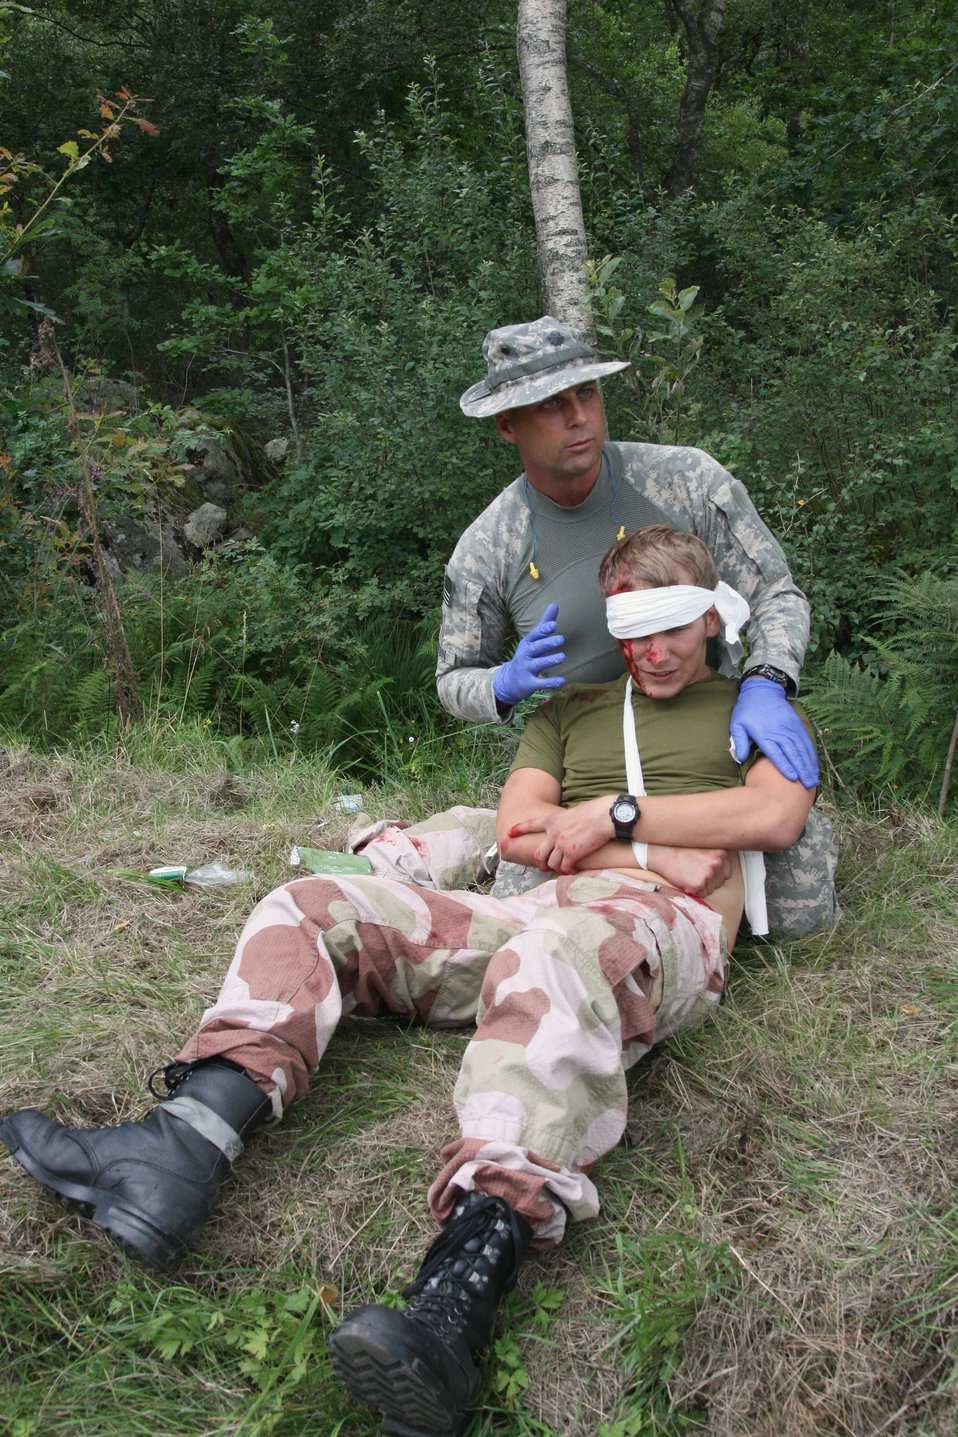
Combat Casualty Care exercise

Lt. Col. Joel Winton tends to a patient during a training scenario during the Interallied Allied Confederation of Reserve Officers annual Congress and Military Competition in Stavanger, Norway. Colonel Winton and his team won first place during the Combat Casualty Care exercise. Colonel Winton is a reservist who recently completed a tour in Iraq as the director and adviser to the Iraqi Ministry of Interior, Operations Directorate and National Command Center.